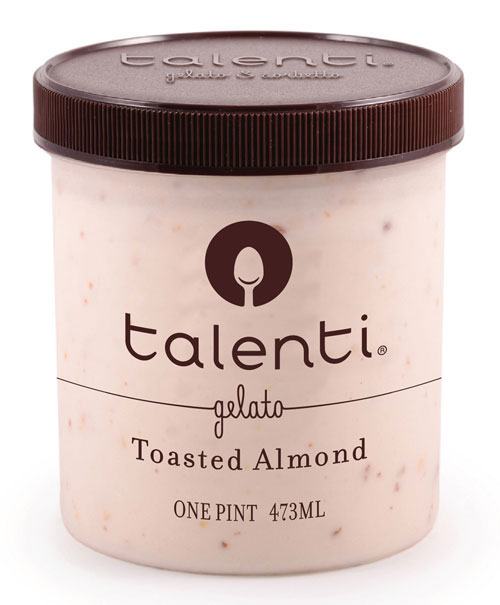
RECALLED - Toasted Almond Gelato

June 28, 2013 – Product Recall – Talenti Gelato Issues Allergy Alert For Undeclared Allergen (Pecans) in Toasted Almond Gelato.